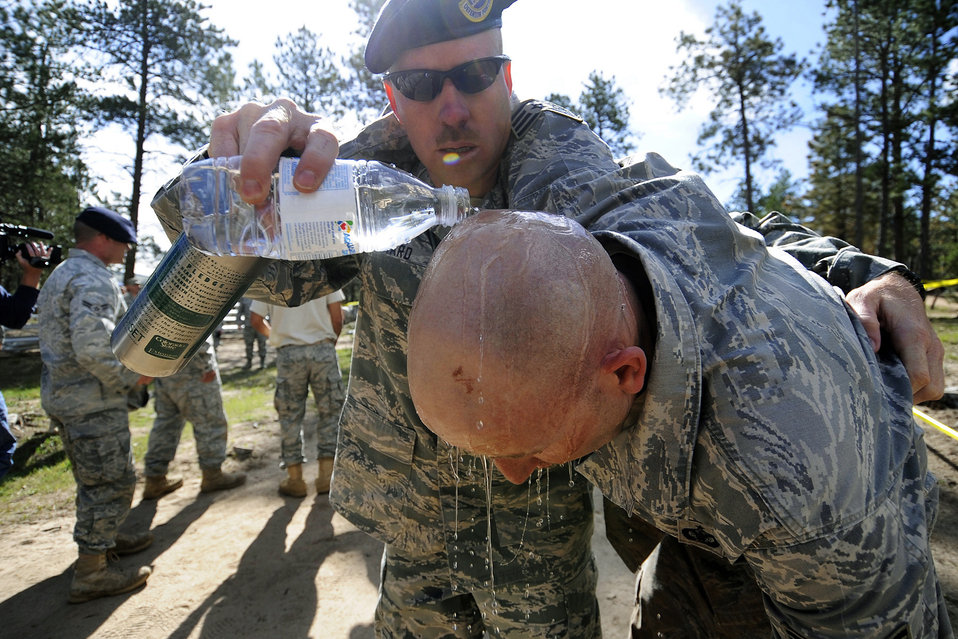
Security Forces Guardian Challenge

Master Sgt. Garrett Maynard pours water over the head of Staff Sgt. Andrew Lewis following the obstacle course run at the U.S. Air Force Academy training area in Colorado May 18, 2010. The Airmen are assigned to the 50th Security Forces Squadron. Guardian Challenge is Air Force Space Command's premier bi-annual competition to determine the best units within the command.